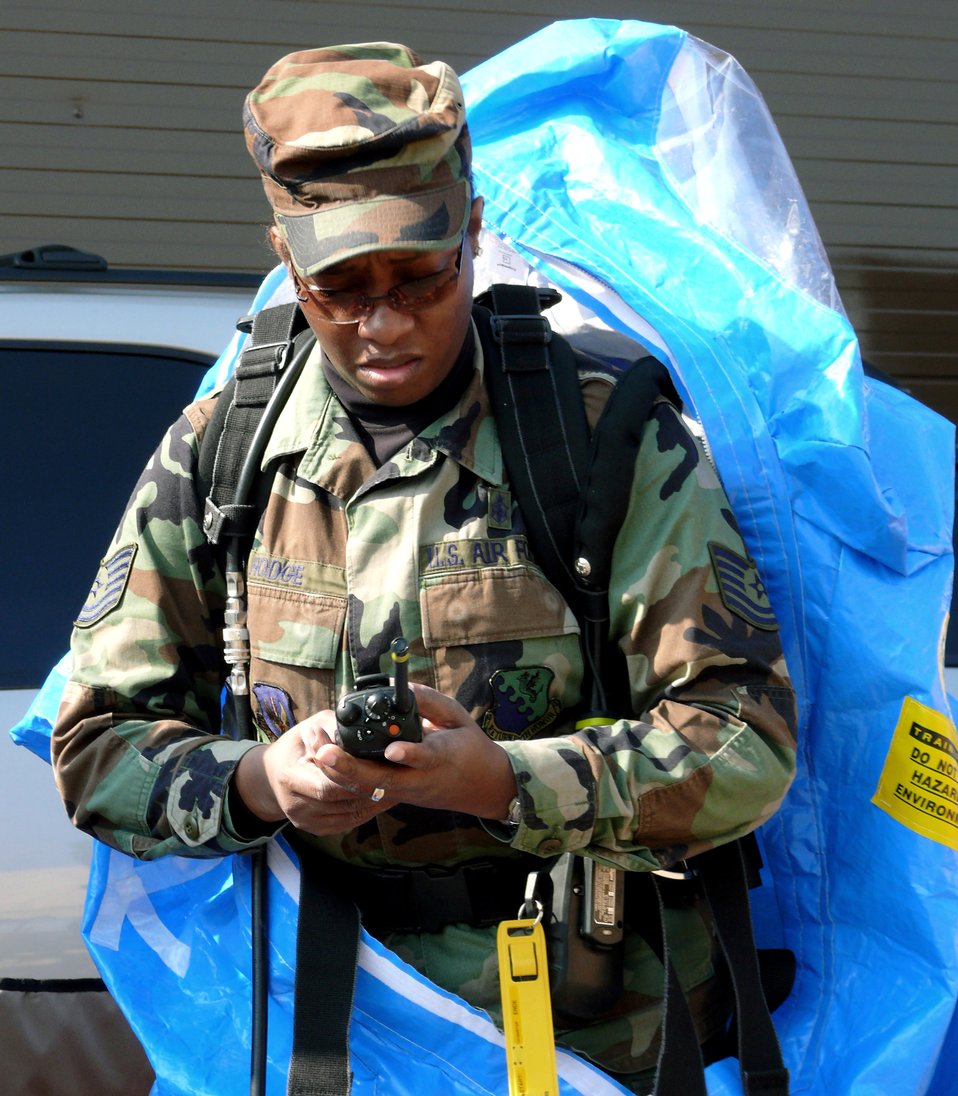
Airmen, Soldiers jointly hone chemical response skills

Staff Sgt. Denise Hodge checks her gear April 12 before donning a protective chemical suit at Ramstein Air Base, Germany. Airmen and Soldiers are training together at a chemical response exercise so they can respond as a single unit if needed.This training familiarizes the Army and Air Force response teams with each others equipment and tactics.